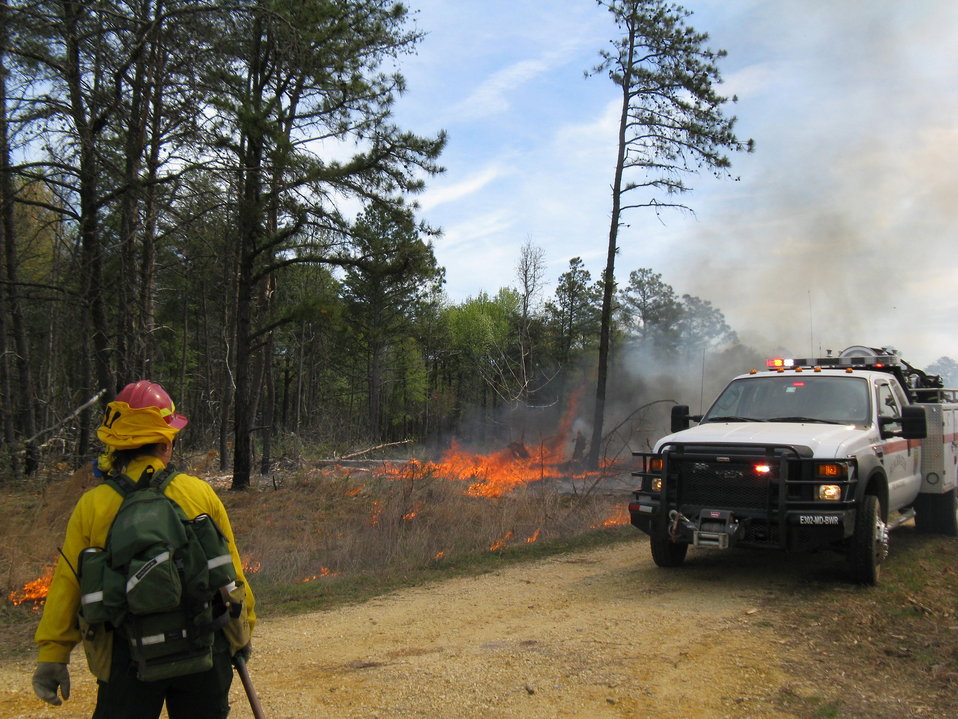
Service Engine

Laurel, Maryland, April 5, 2012: A fire engine and crew from Blackwater National Wildlife Refuge assists with a controlled burn at Patuxent Research Refuge. The burn was done at Patuxent Research Refuge's Savannah Restoration Unit to increase refuge species and habitat diversity. Specifically, the refuge hoped to increase density and diversity of rare darkling beetles and forest floor plants.